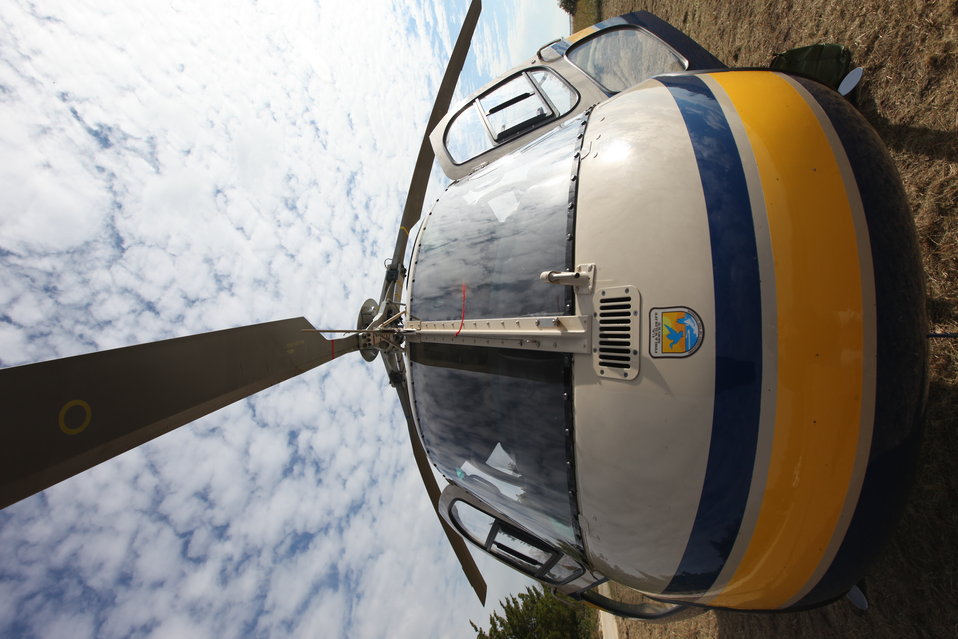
Photo of the Week - U.S. Fish and Wildlife Service surveyed the damages along the East coast following the storm.